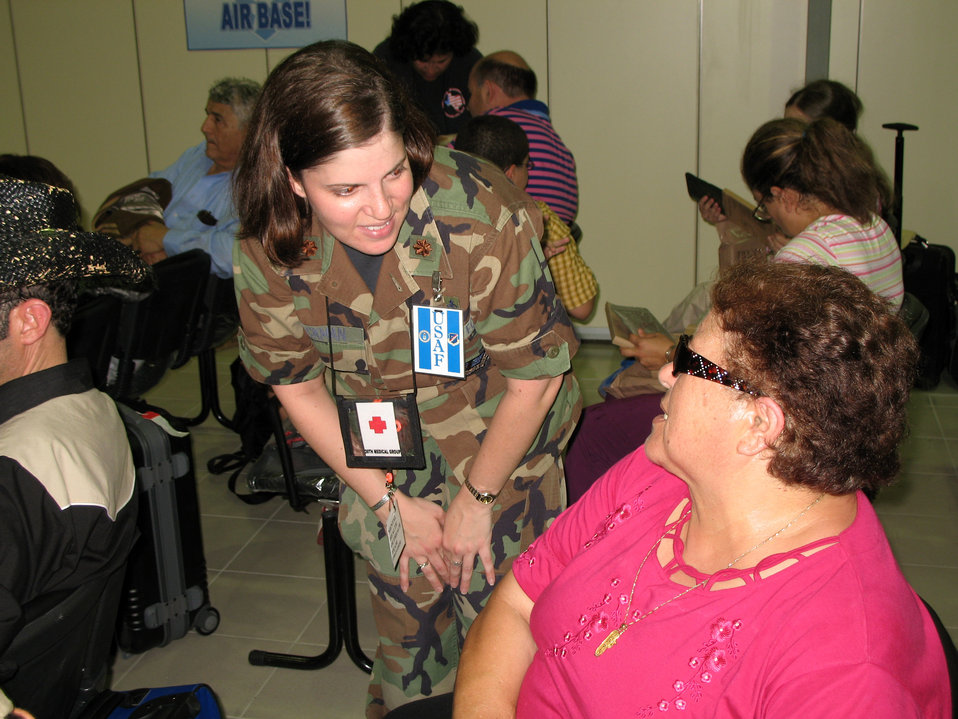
Americans arrive in Turkey from Lebanon

Maj. Lisa Blackman talks with an American citizen who just arrived at Incirlik Air Base, Turkey, July 24th, from Lebanon. More than 1,600 citizens arrived in the port city of Mersin, Turkey, on the USS Trenton before being transported by bus to Incirlik. Major Blackman is with the 39th Medical Squadron's life skills support center.